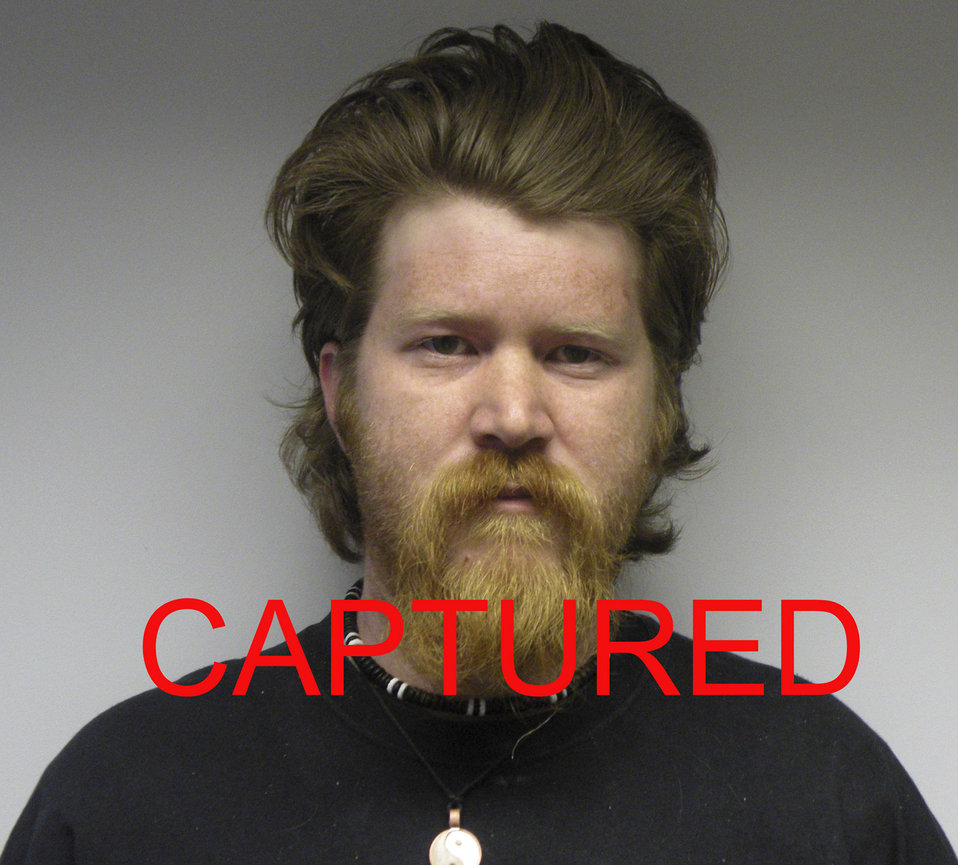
Law enforcement officials capture Airman on the run for 8 months

Airman Basic Jeremy Parrott was apprehended June 3 at approximately 8 p.m. in Ipswich, England. He escaped Air Force custody in September 2008 after being charged with possession of child pornography and sentenced to three years of confinement in July 2008.